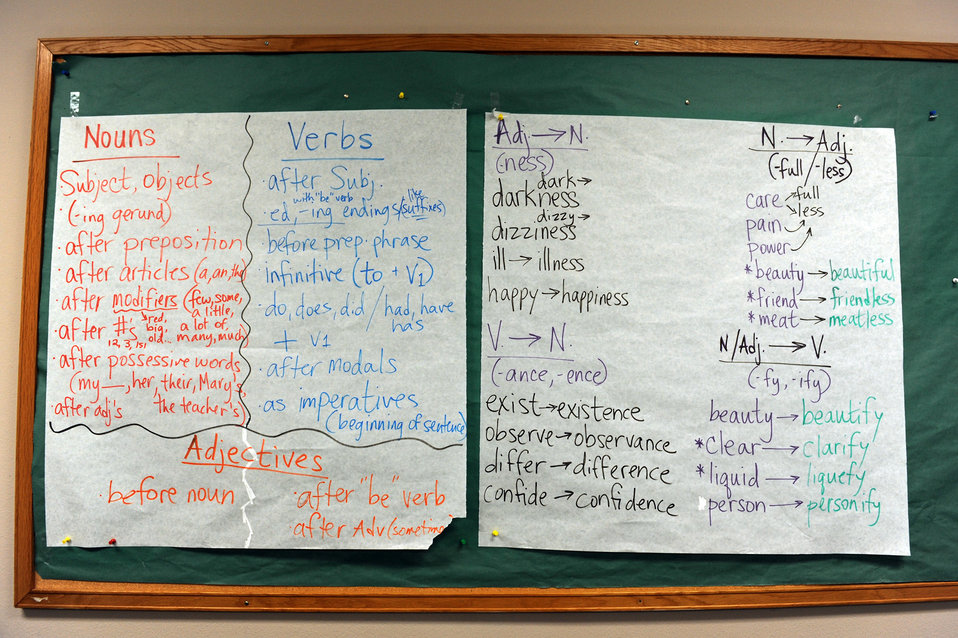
Language Institute's mission reaches for the future

Notes remain on a chalkboard during an English language course at the Defense Language Institute at Lackland Air Force Base, Texas.